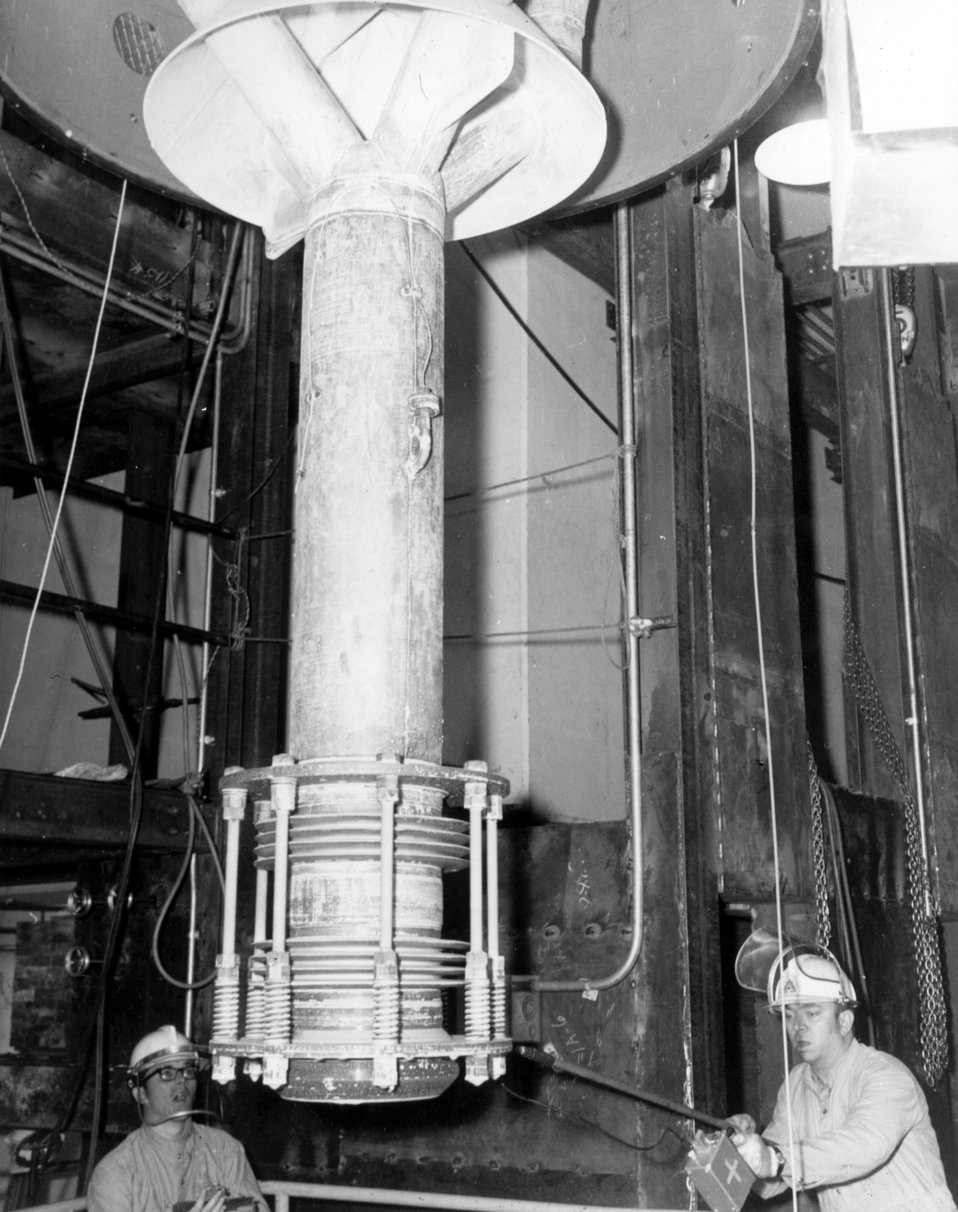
The lower part of the assembly emerging from a special silo designed by EBR-II engineers to receive such components from the sodium environment.
c.1972